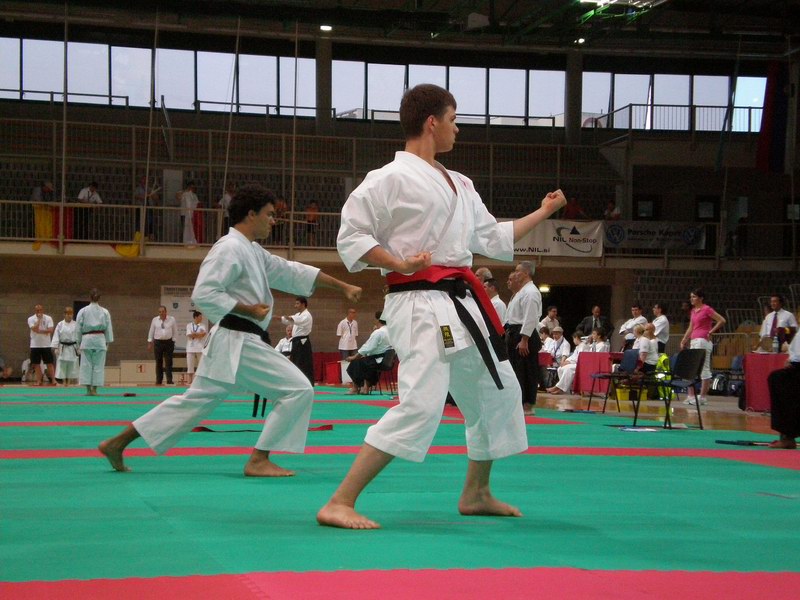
Lietuvių: 2007 m. Europos tradicinio karate čempionato metu, gegužės 27 d. Koper, Slovėnija. Arčiau - Laimonas Nišniava, iškovojęs sidabro medalį fuku-go rungtyje.